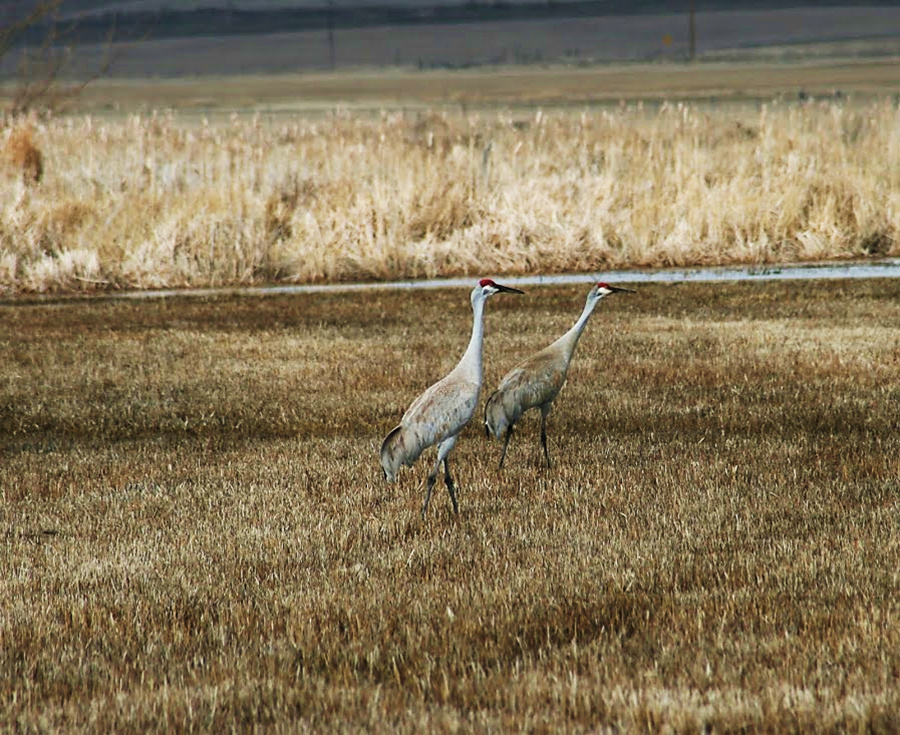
Post-Burn Monitoring

While the Southeast Idaho Fire Management Officer (FMO) and Refuge Wildlife Biologist were monitoring this post-burn site at Oxford Slough Waterfowl Production Area (WPA), they sighted trumpeter swans, sandhill cranes, Canadian geese, mallards, and pintail ducks. Oxford Slough WPA is located on the edge of Oxford in southeast Idaho. It was originally purchased to protect redhead duck nesting habitat, and is the only waterfall production area in the Service’s Pacific Region. The area is largely hardstem bulrush marsh, interspersed with open water and surrounded by areas of playa, saltgrass flats, native wet meadow, and some cropland. The Fire Management Officer had conducted a 700-acre prescribed burn at this site last fall to restore marsh habitat, and was happy to see so much wildlife on the monitoring visit post-burn. Prescribed fire is used periodically in the more densely vegetated areas of the marsh. It creates open water ponds in the marsh after re-flooding and recycles nutrients that increase plant growth, resulting in improved habitat and markedly increased use by waterfowl. This is the first time trumpeter swans have been sighted on the WPA.